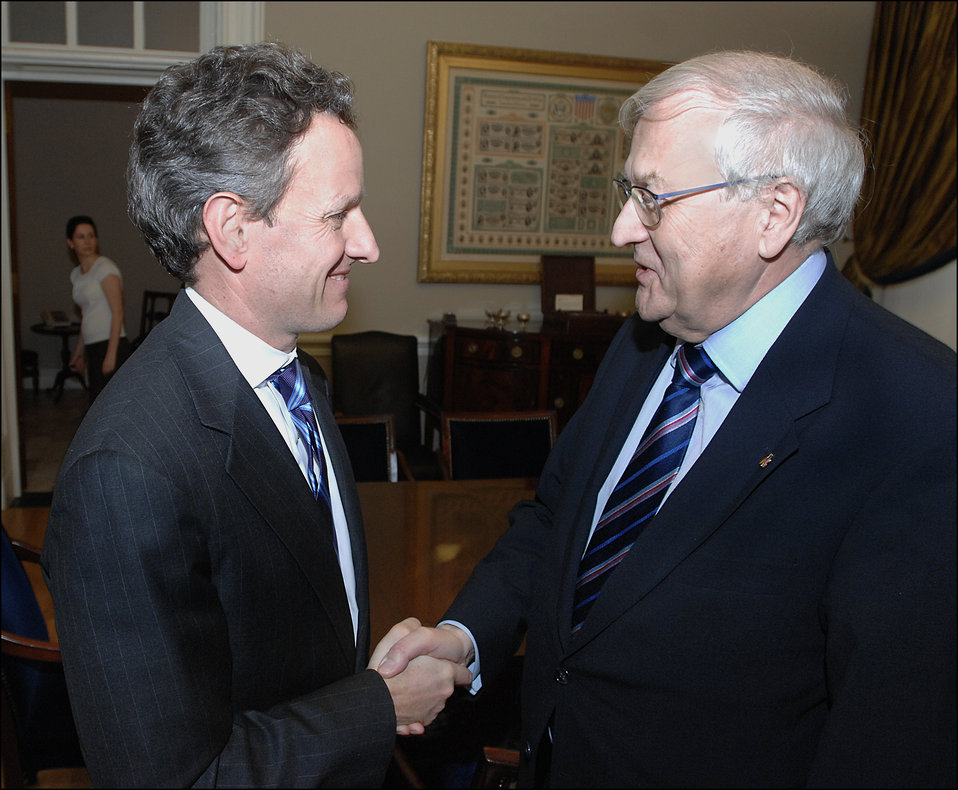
German Federal Minister for Economics and Technology Rainer Brüderle

On February 1, 2010, Secretary Geithner met with German Federal Minister for Economics and Technology Rainer Brüderle at Treasury.